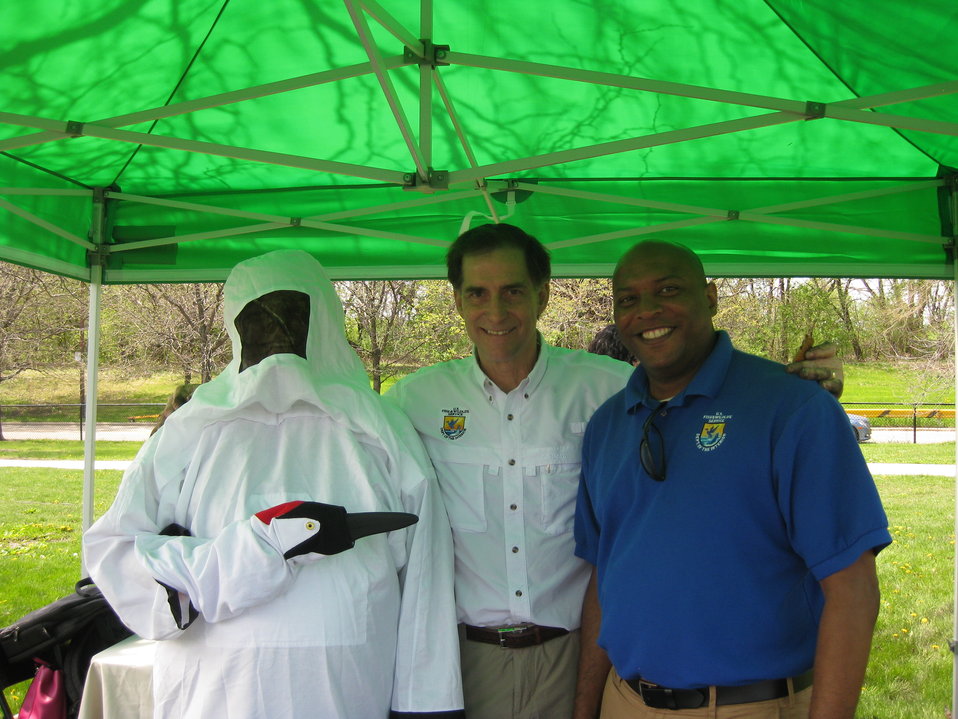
Chicago FO Biologist Shawn Cirton with FWS Director Dan Ashe at whooping crane booth

Chicago Park District Burnham Corridor Community Planting Day
May 10, 2014
Photo by USFWS; Louise Clemency